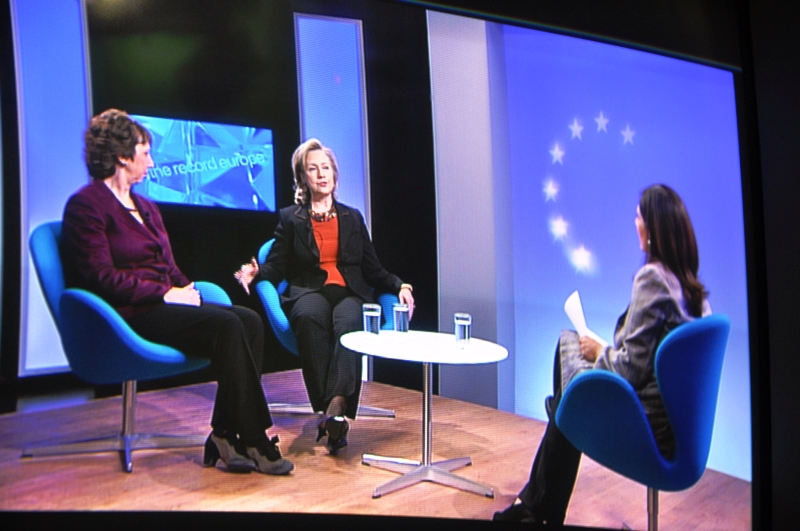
Secretary Clinton and EU High Representative Ashton Participate in a Joint BBC Interview

U.S. Secretary of State Hillary Rodham Clinton and EU High Representative Catherine Ashton participate in a joint BBC interview in Brussels, October 14, 2010.